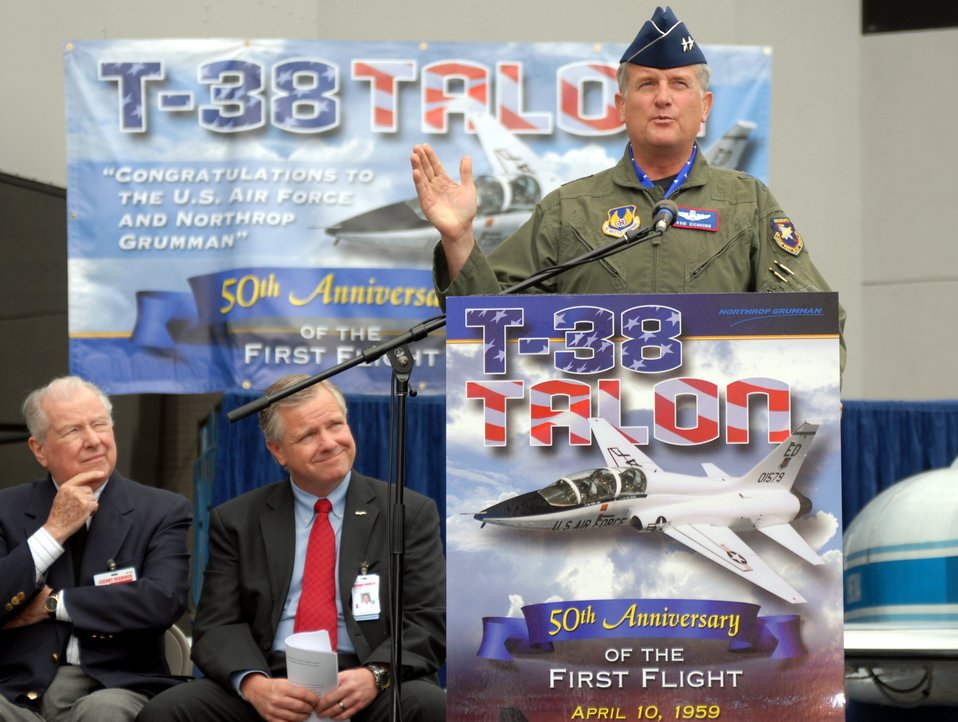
T-38 celebrates 50 years of service

Maj. Gen. David Eichhorn, commander of the Air Force Flight Test Center at Edwards Air Force Base, Calif., speaks at the Northrop Grumman facility in El Segundo, Calif., April 10 during the commemoration of the T-38 Talon?s first flight fifty years ago on April 10, 1959. Duke Dufresne (center), sector vice president and general manager of the Strike and Surveillance Systems division of Northrop Grumman Aerospace Systems, and Dan Rooney, former Northrop Aircraft Division vice president, also provided remarks during the event.